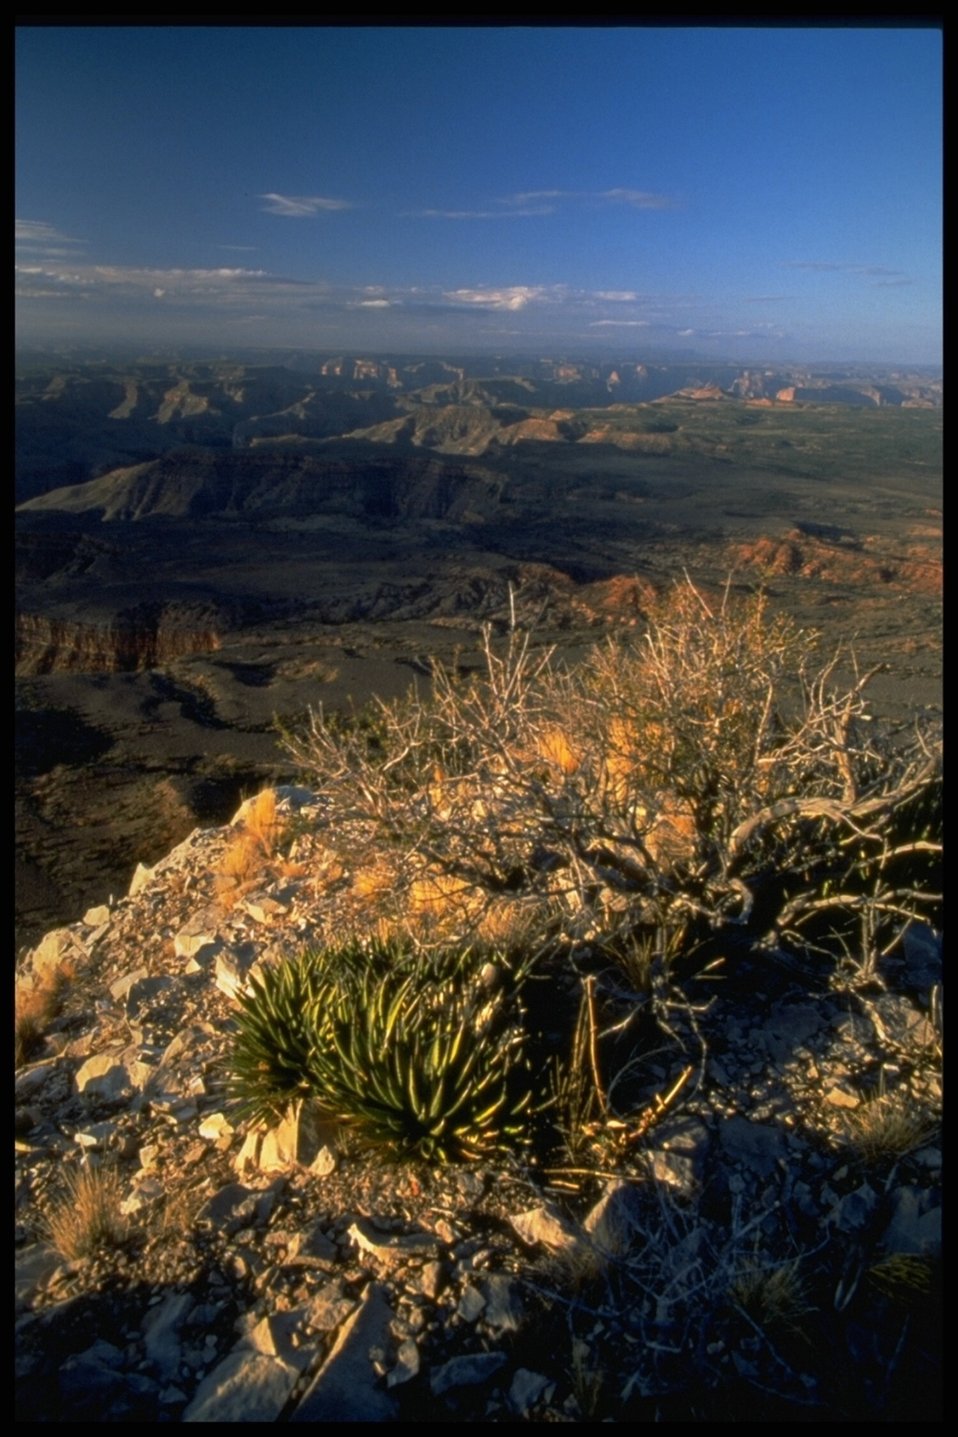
A view of a canyon with the edge of the shot with a close up cacti picture.